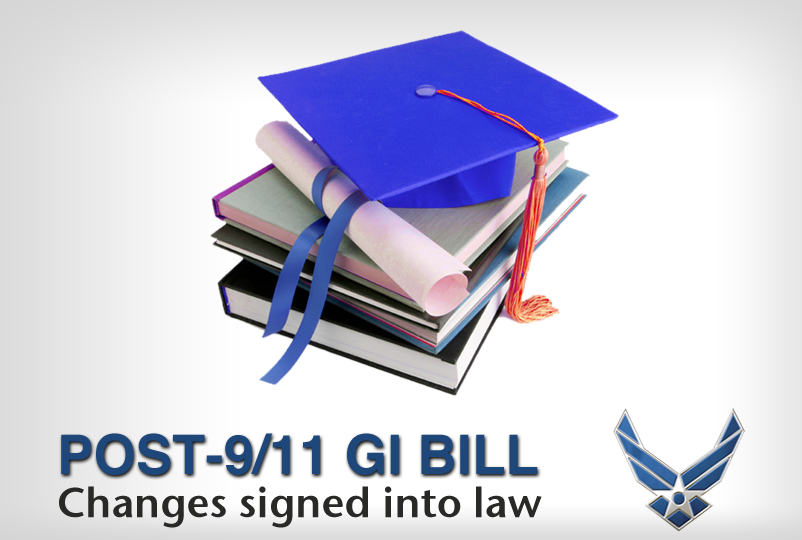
Changes to GI Bill